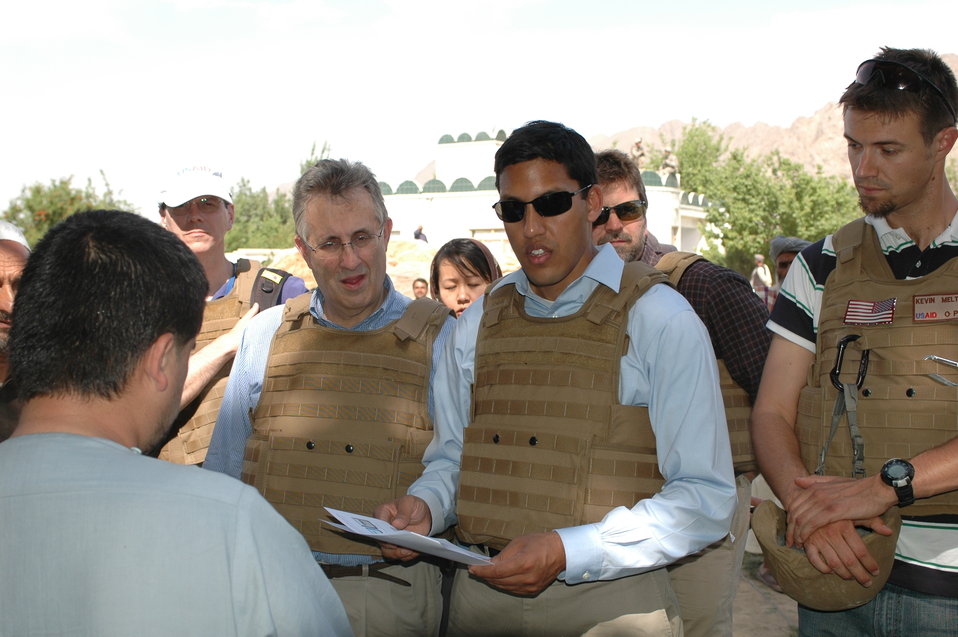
Dr Shah Visits Argandab April 10, 2010